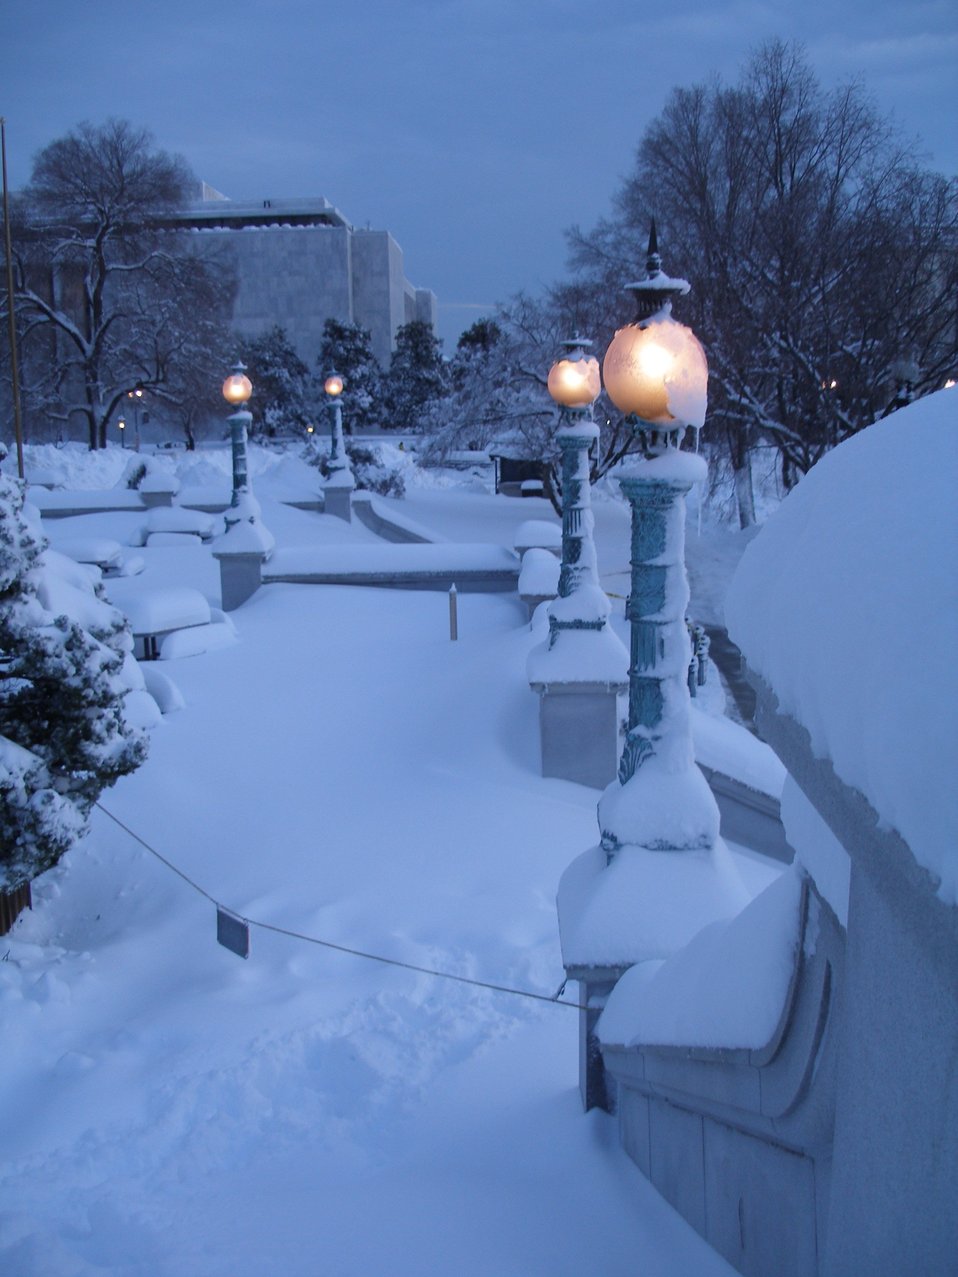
Snow, snow, snow with the Madison Building of the Library of Congress seen from an entrance to the Jefferson Building.